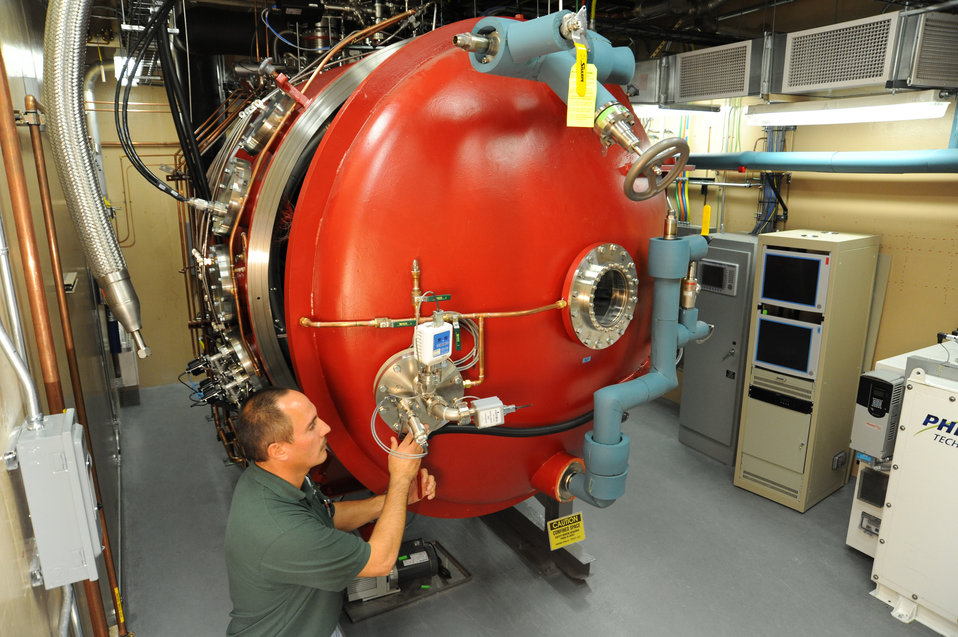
SPACE POWER SYSTEM TESTING AT IDAHO NATIONAL LABORATORY, THE THERMAL VACUUM CHAMBER ENABLES TESTING OF DEEP SPACE POWER SOURCES TO VERIFY THEY CAN WITHSTAND THE COLD VACUUM OF SPACE.